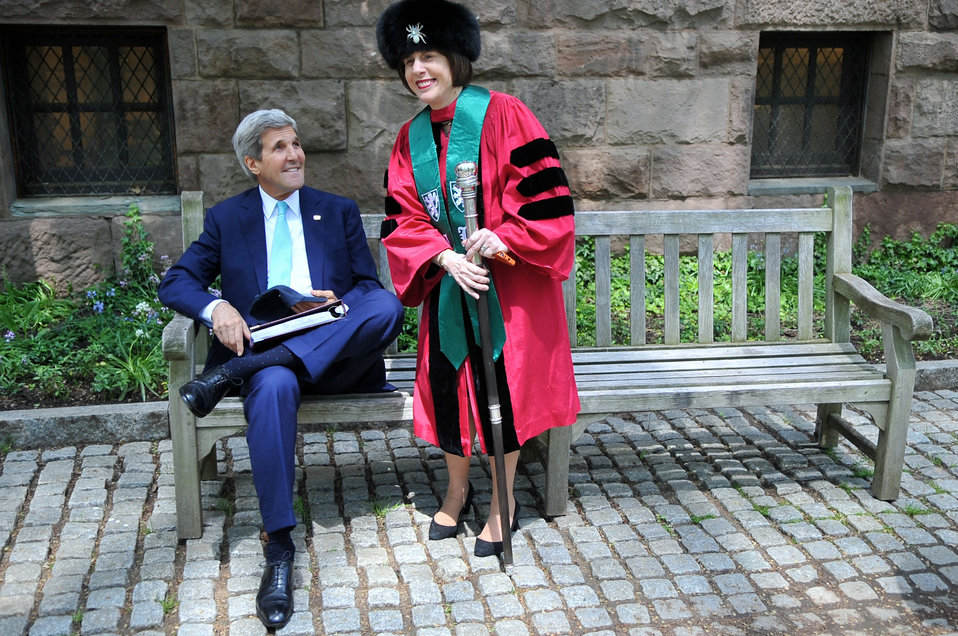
Secretary Kerry Confers With Jonathan Edwards Master Laurans Before Class Day Speech

U.S. Secretary of State John Kerry confers with the leader of his former house, Jonathan Edwards College Master Penelope Laurans, as the 1966 Yale University graduate awaits to deliver Class Day remarks on the campus in New Haven, Connecticut, on May 18, 2014.